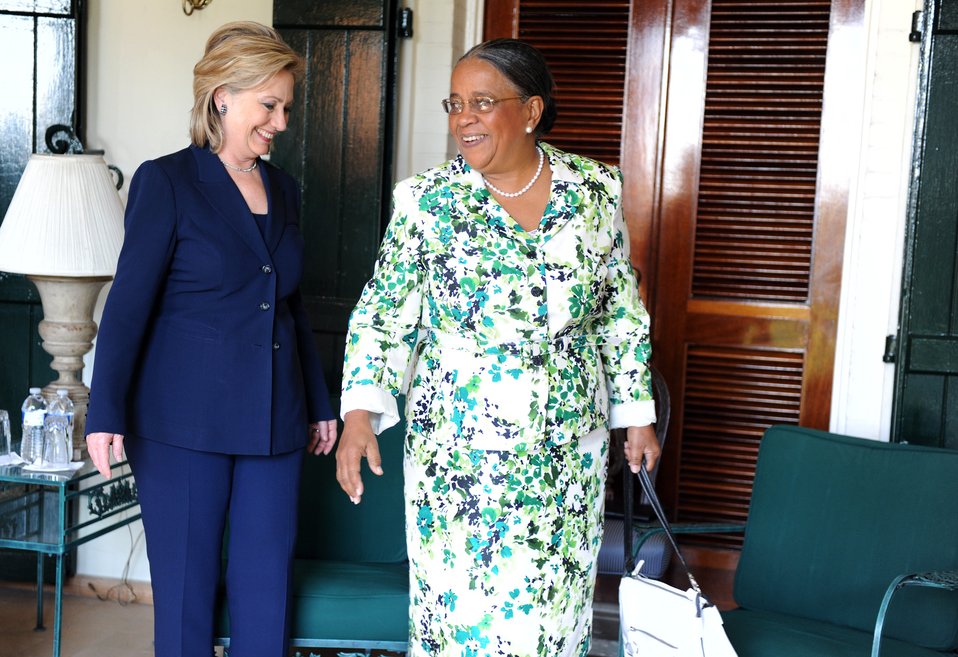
Secretary Clinton Meets With Haitian Presidential Candidate Manigat

U.S. Secretary of State Hillary Clinton meets with Haitian Presidential Candidate Mirlande Manigat on January 30, 2011, in Port-au-Prince, Haiti.